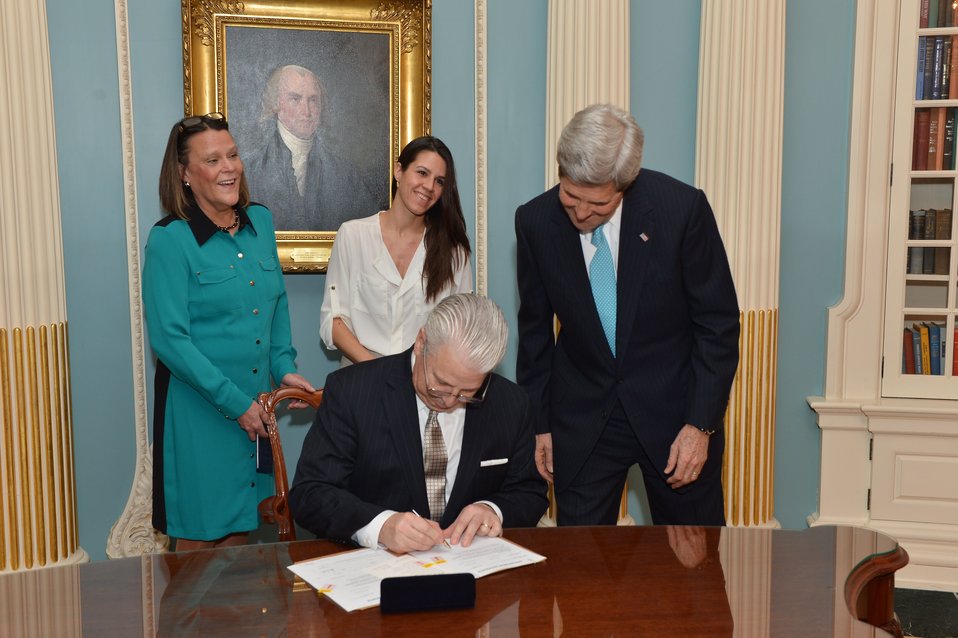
Assistant Secretary Starr Signs His Appointment Papers

With U.S. Secretary of State John Kerry and his family looking on, Assistant Secretary for Diplomatic Security Greg Starr signs his appointment papers to become Assistant Secretary for Diplomatic Security during his swearing-in ceremony at the U.S. Department of State in Washington, D.C., on January 8, 2014.